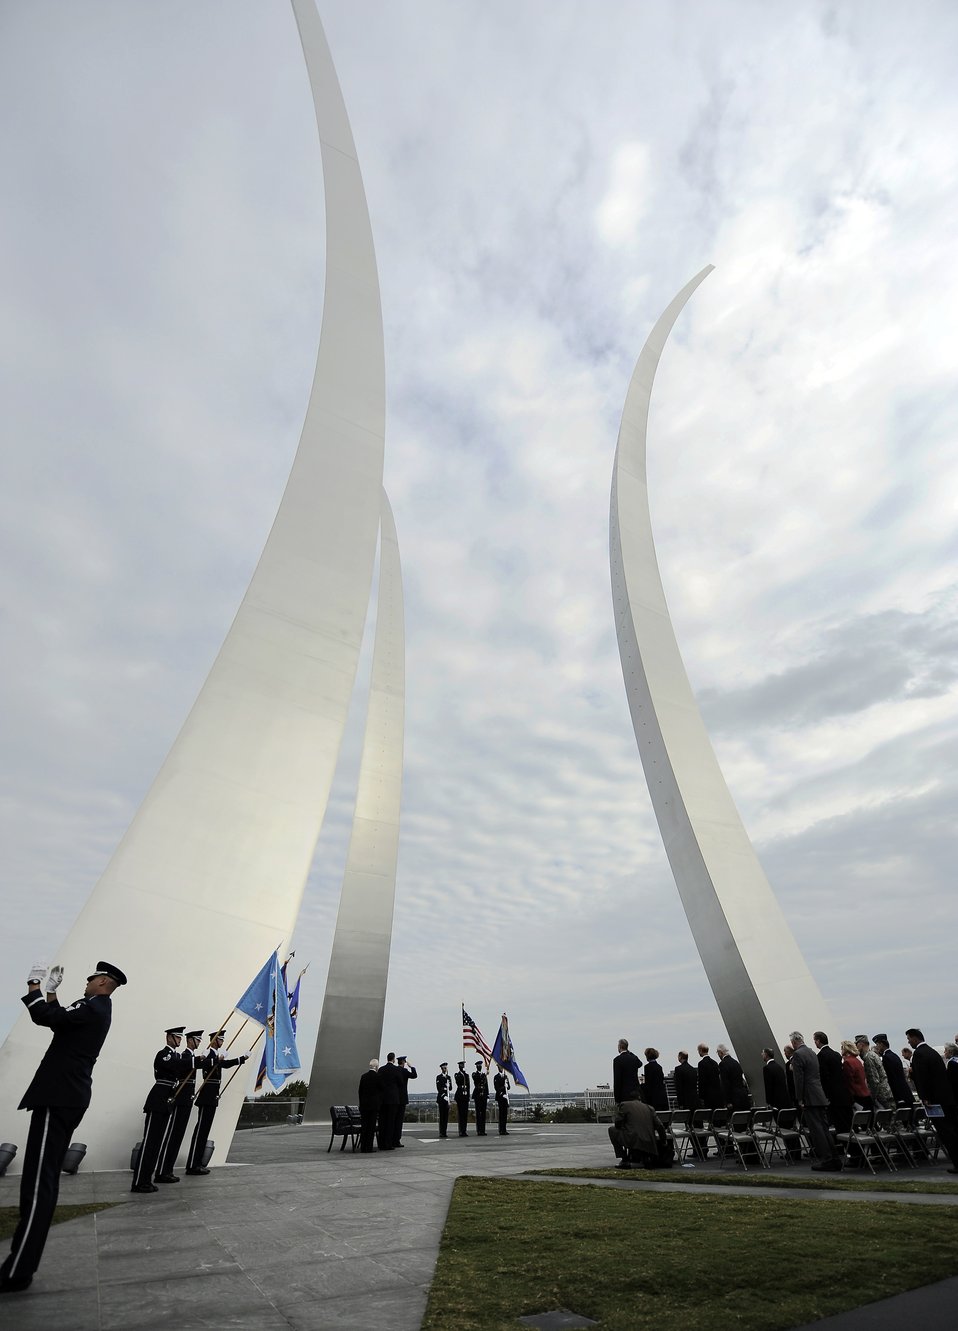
Secretary of Defense Robert M. Gates

U.S. Defense Secretary Robert M. Gates, Secretary of the Air Force Michael B. Donley and Air Force Chief of Staff Norton A. Schwartz stand at attention prior to Secretary Donley's swearing in by Secretary Gates at the Air Force Memorial in Arlington, Va., Oct. 17.